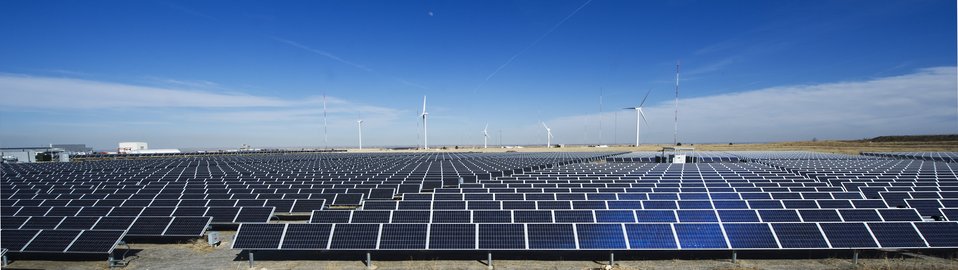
NREL'S newest PV array at the National Wind Technology Center near Boulder, Colorado is an opportunity to study how ecosystems respond to renewable energy development and development best management practices that re-established habitat, minimize weed invasion, prevent erosion and protect wildlife.